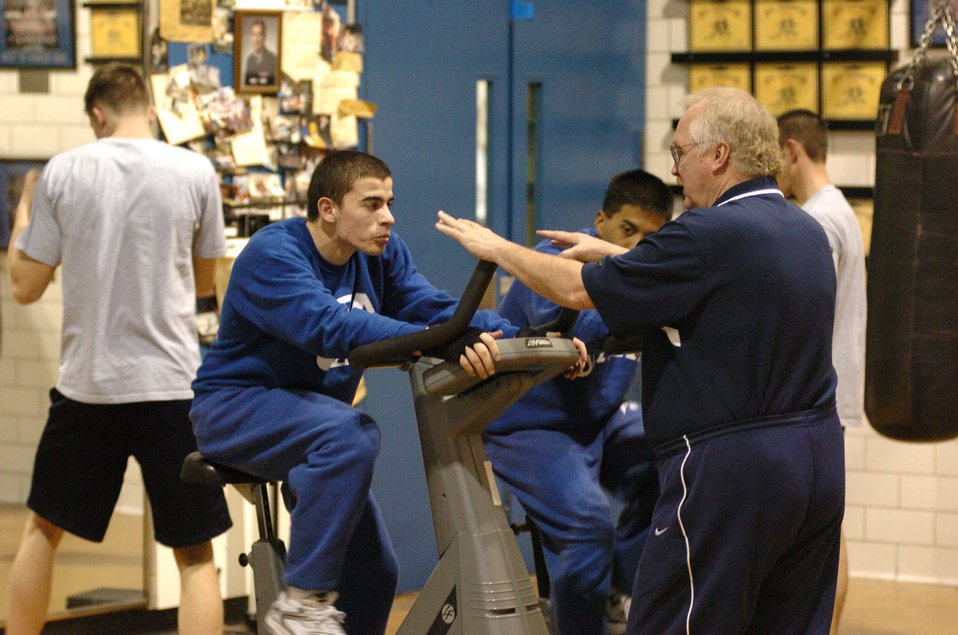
Academy boxing coach teaches valuable lessons

U.S. Air Force Academy boxing coach Ed Weichers Jr. talks to cadets about their upcoming fights March 2. Coach Weichers has spent more than 30 years training academy cadets the skills needed to step into the ring. His teams have never finished lower than second in the nation in the past 27 years.